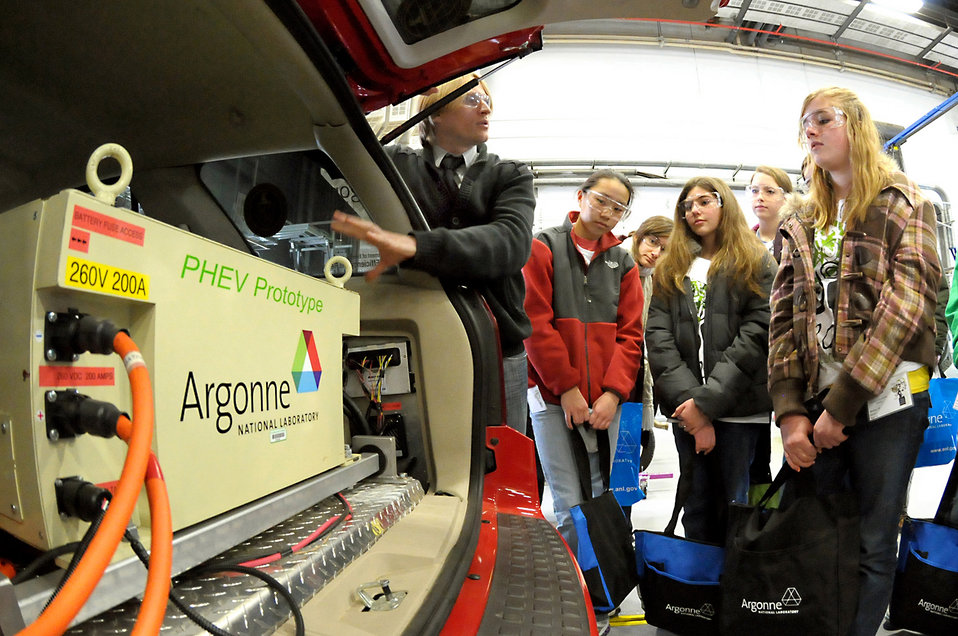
Participants in the Argonne National Laboratory's Introduce a Girl to Engineering Day 2011.